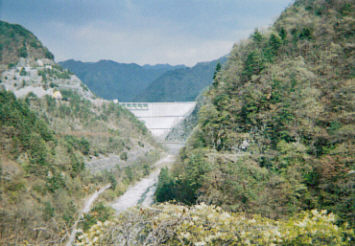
Dam